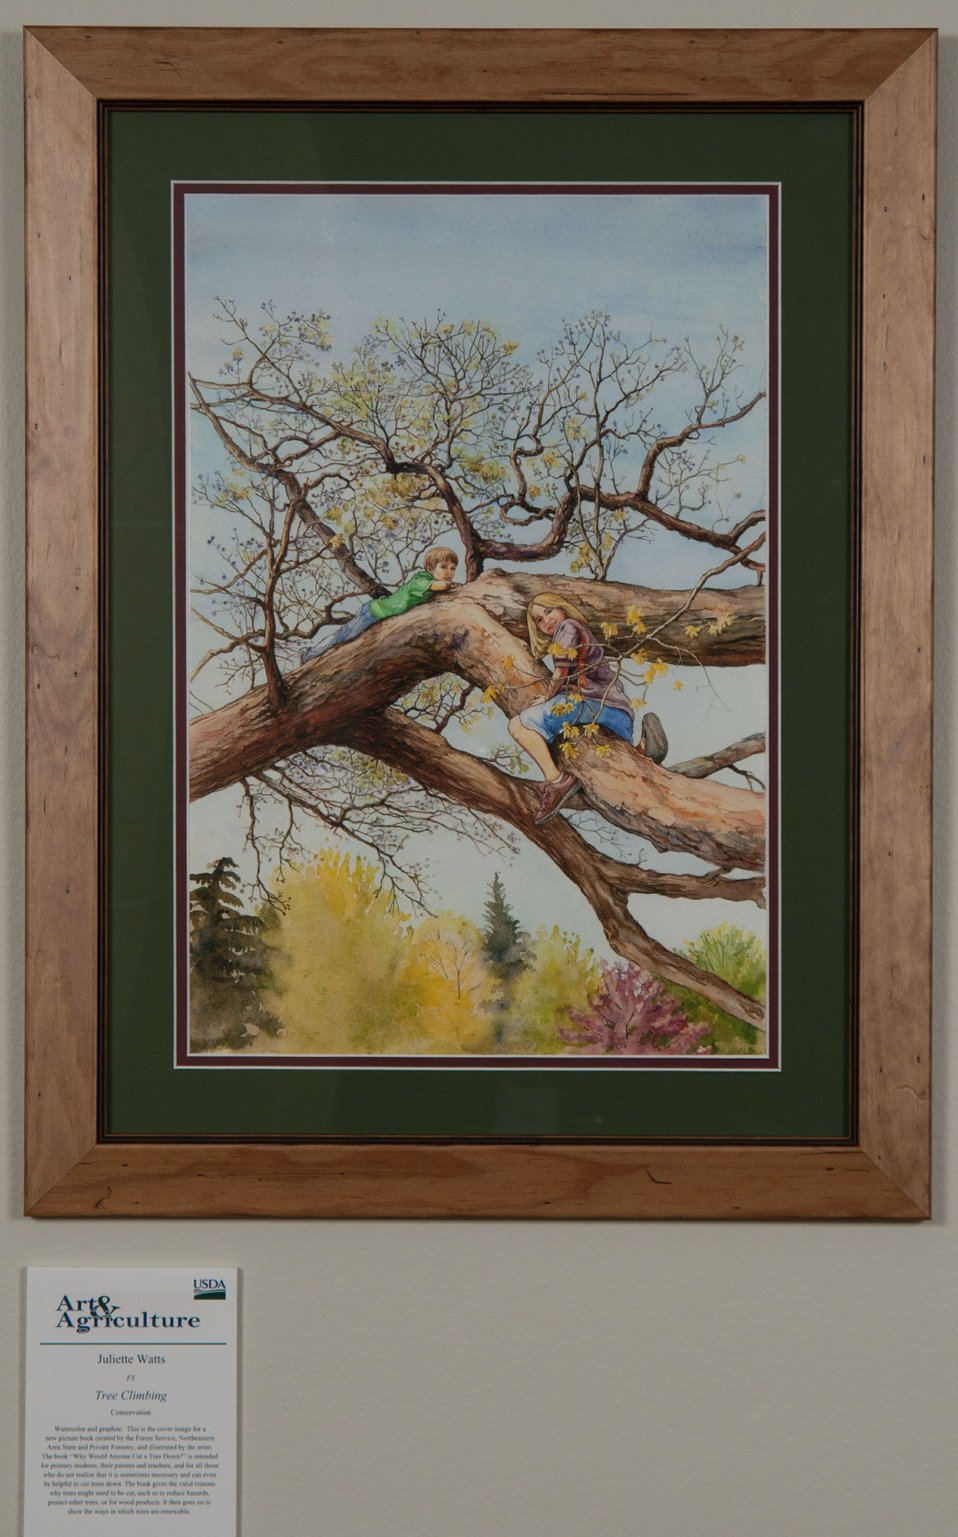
Online Viewer's Choice entries of the 2013 Art & Agriculture, Tuesday, July 9, 2013, in the South Building, Washington, D.C. Themes were expressed by employees from across the department and the contest was open to full-time and part-time USDA employees. Winning artwork will be displayed till the end of the year. U.S. Artistic expression is a creative outlet that is vital for an individual to grow and develop.